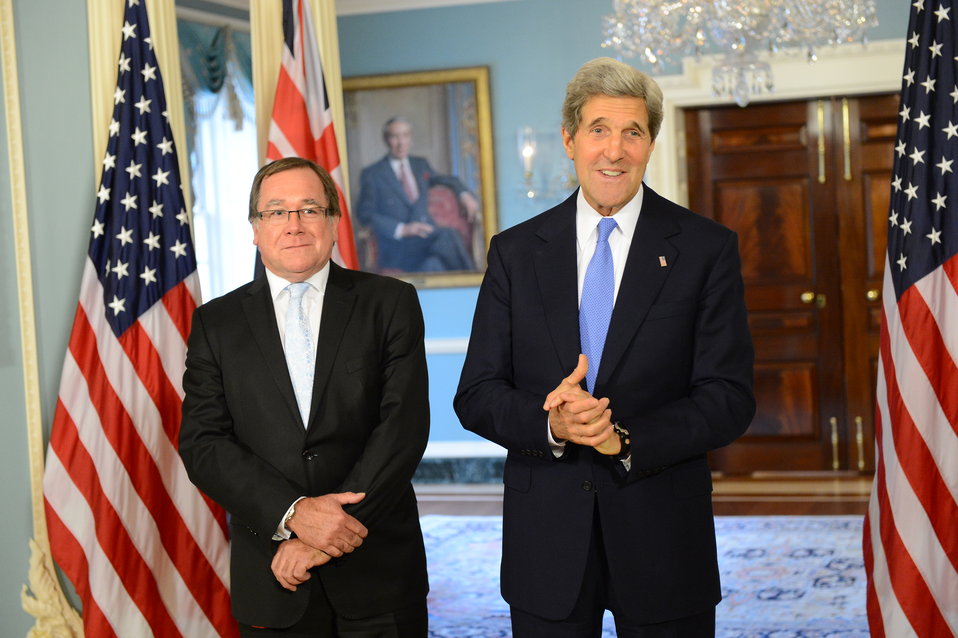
Secretary Kerry Meets With New Zealand Foreign Minister McCully

U.S. Secretary of State John Kerry meets with New Zealand Foreign Minister Murray McCully at the U.S. Department of State in Washington, D.C., on May 20, 2013.